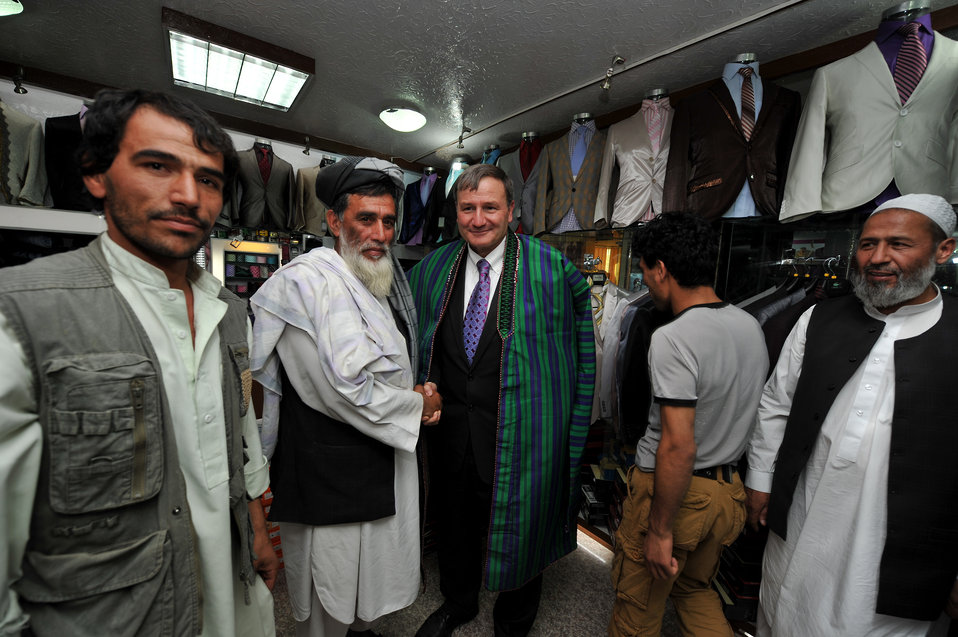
سفیر ایالات متحده آیکنبیری وشاروال کابل نواندیش مغازه فروشگاه را بعد از حملات ماه جنوری دوباره افتتاح نمودند